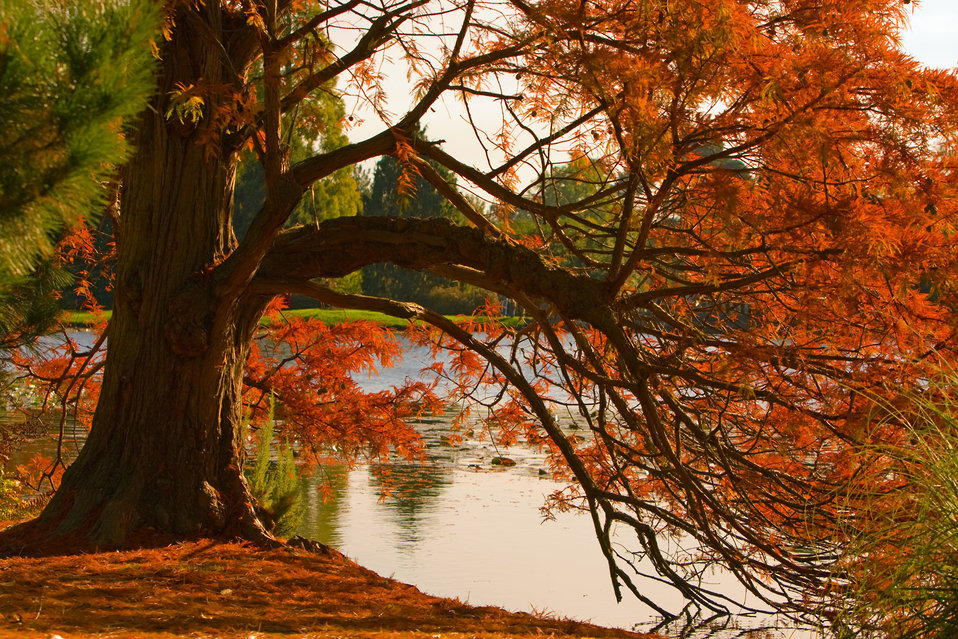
Autumn colors

Beautiful autumn tree by the water.